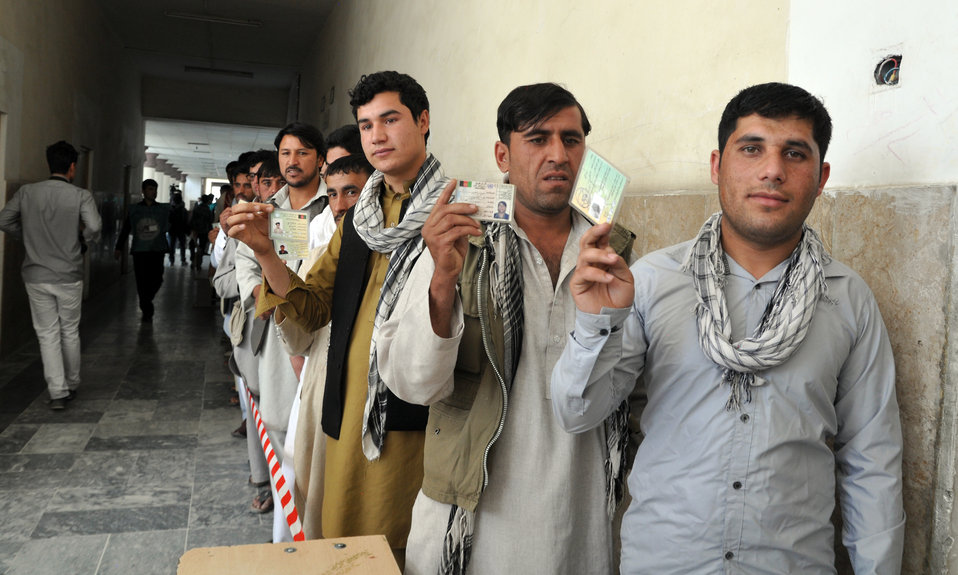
Afghan men display voting cards in front of a Kabul polling center.